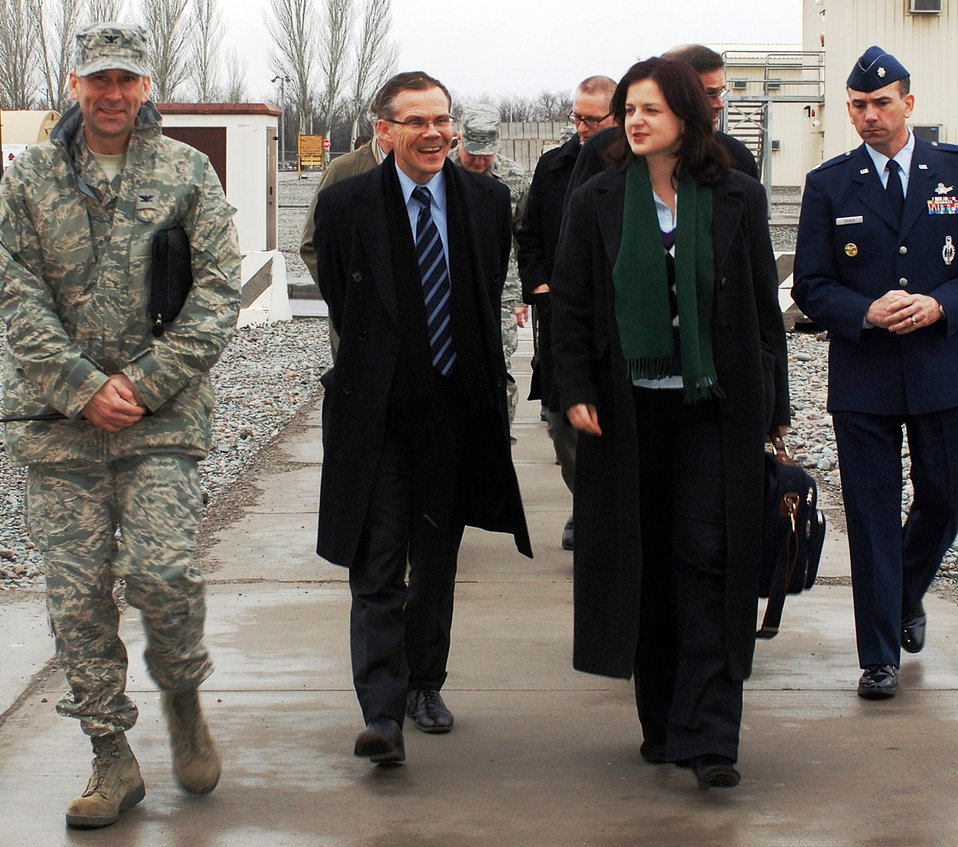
European Union delegates visit Manas

Col. Christopher Bence (left) and Lt. Col. Jeff Zoubek (far right) escort a delegation of representatives from the European Union on a Feb. 21 tour of Manas Air Base, Kyrgyzstan. The five-person delegation, led by Ambassador Pierre Morel, received a tour of the air mobility hub and a wing mission brief during their visit. Coalition personnel from 25 EU countries transit through Manas AB in support of the International Security Assistance Force in Afghanistan. Colonel Bence is the 376th Air Expeditionary Wing commander, and Colonel Zoubek is the Defense Attache at the U.S. Embassy in Bishkek.